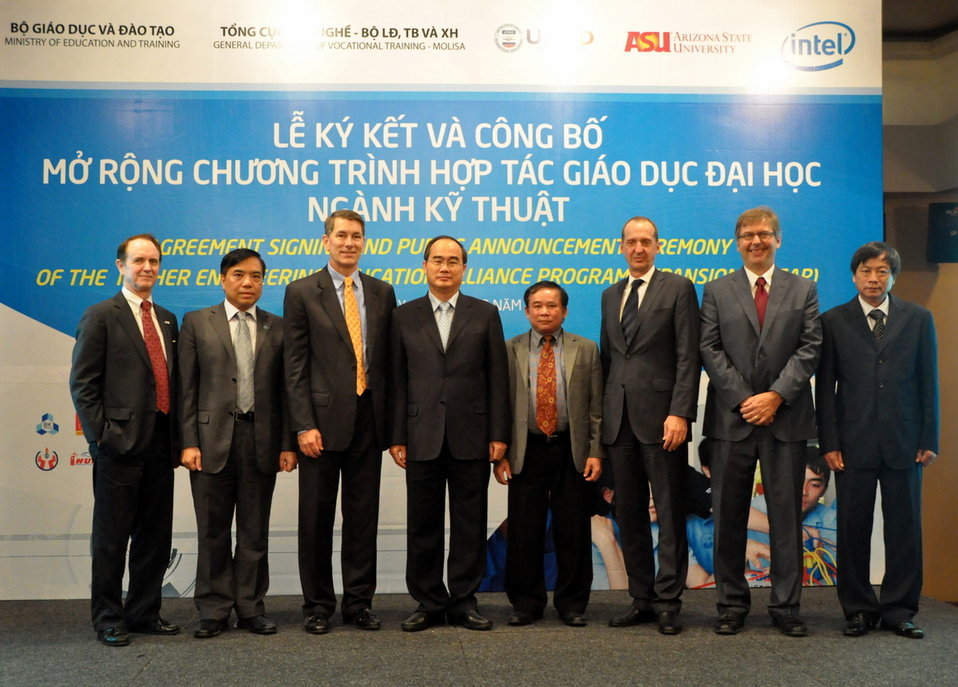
Higher Engineering Education Alliance Program Expansion Launch

Hanoi, August 20, 2012.